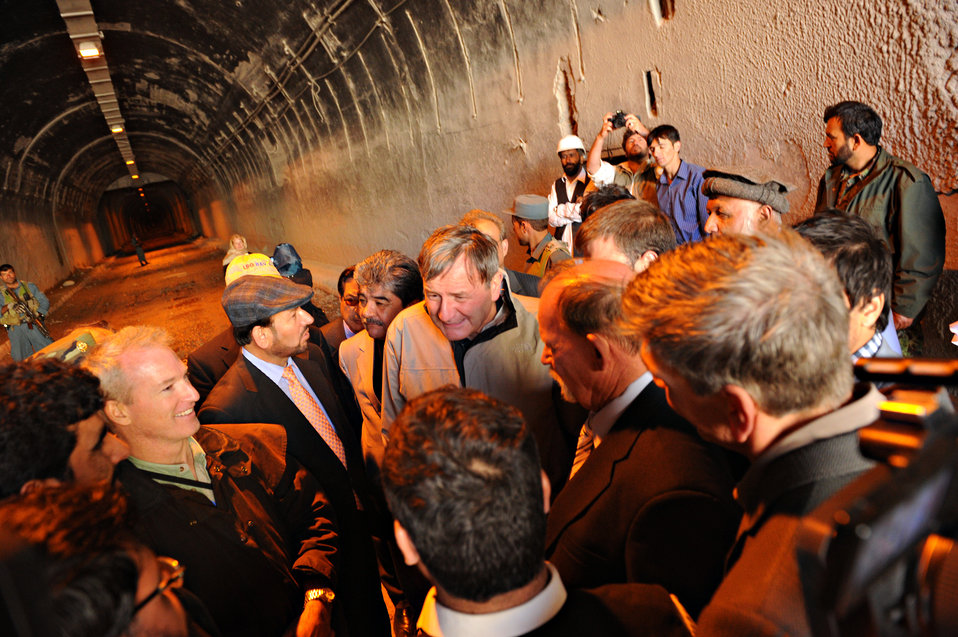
U.S. Ambassador Karl W. Eikenberry attends a ceremony to mark the beginning of renovations at the Salang Tunnel on the border of Parwan and Baghlan Provinces, Afghanistan, on Wednesday, June 15, 2011. (S.K.Vemmer/Department of State)